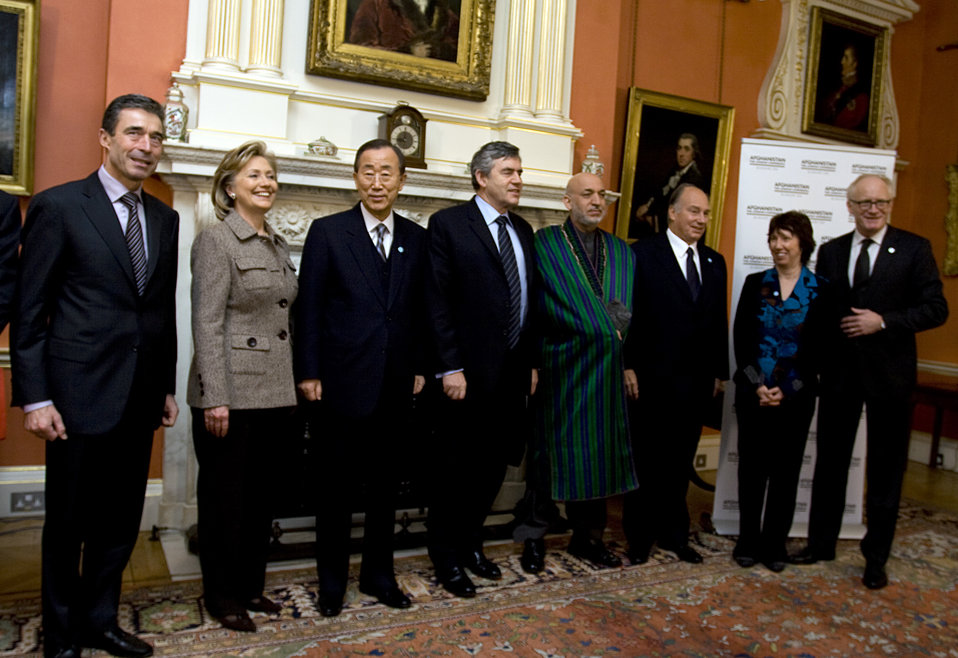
London Conference on Afghanistan

U.S. Secretary of State Hillary Rodham Clinton meets with world leaders at the London Conference on Afghanistan in London, U.K. January 28, 2010.